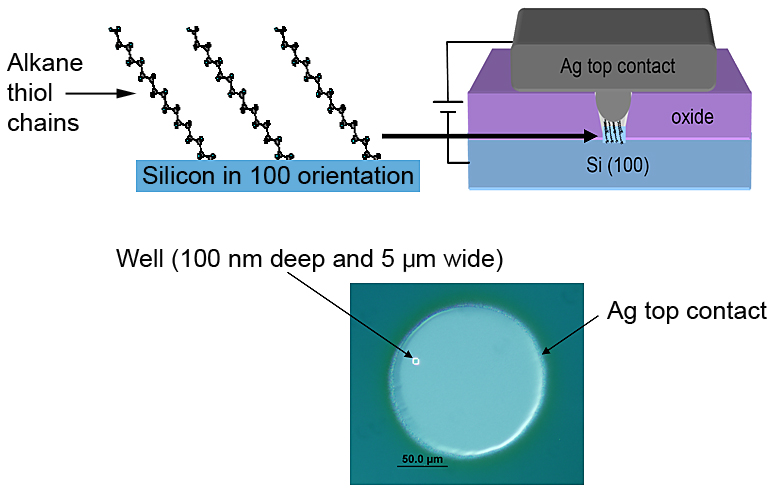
Molecular Electronics

Side and top views of the NIST molecular resistor. Above are schematics showing a cross-section of the full device and a close-up view of the molecular monolayer attached to the CMOS-compatible silicon substrate. Below is a photomicrograph looking down on an assembled resistor indicating the location of the well.